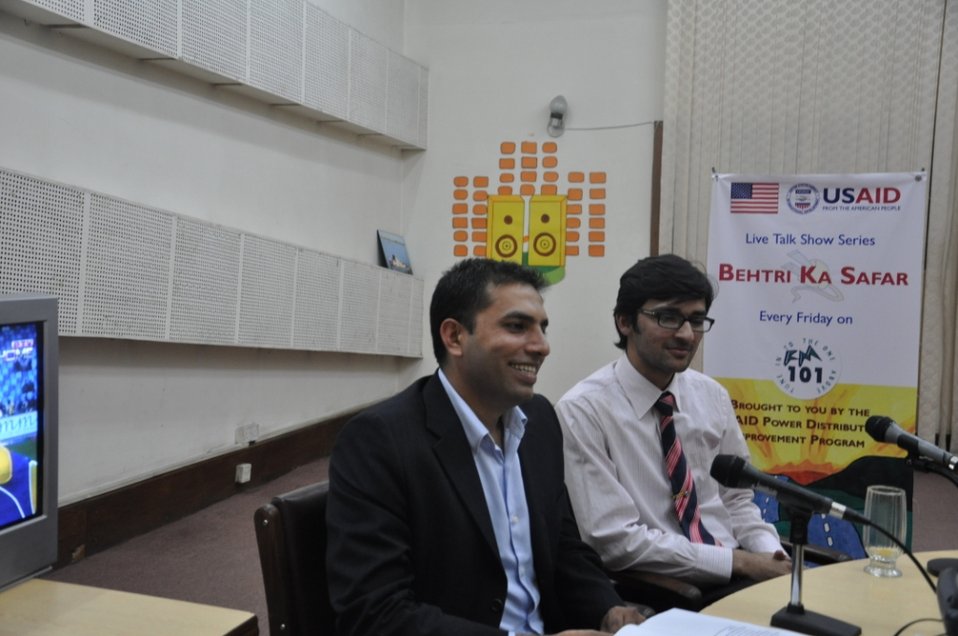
18 Nov 2011 - Communications and Outreach team at Radio Pakistan

Members of communications team from USAID Power Distribution Program summarizing USAID Power distribution Program’s last year in terms of the projects undertaken and describing the program’s achievements and results.